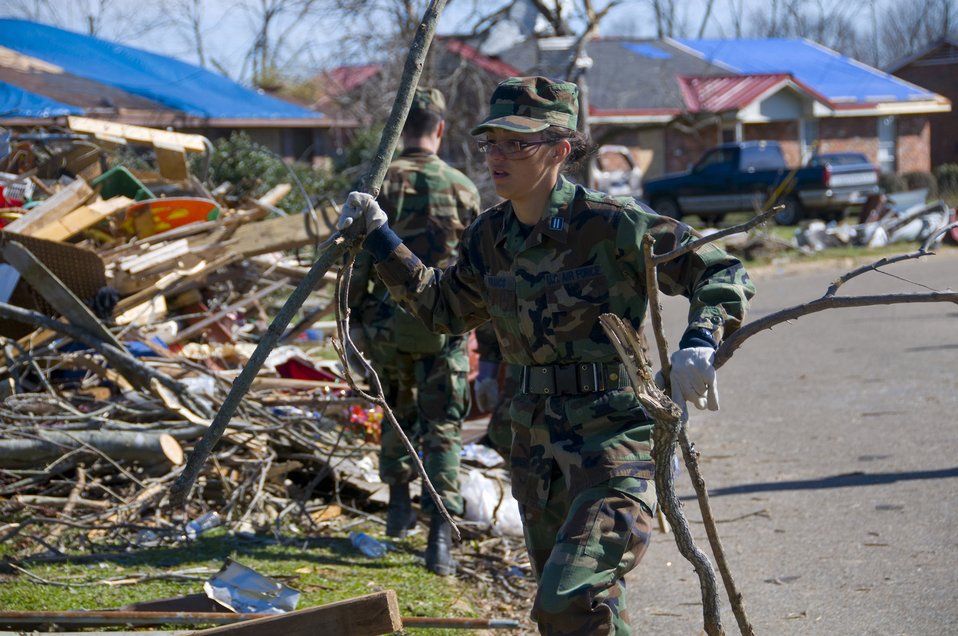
Maxwell Airmen assist city devastated by tornado

Officer Trainee Rosalva Franco clears debris Feb. 19 after a Feb. 17 tornado ripped through Prattville, Ala. More than 65 Officer Training School basic officer trainees and 20 other Airmen assigned to Maxwell Air Force Base, Ala., volunteered to help organize and clear debris from the city located 15 miles northwest of the base. Latest estimates indicate that more than 150 home were destroyed and 760 homes were damaged in a series of storms that created 150 mph winds. Of those homes, approximately 25 military homes were destroyed and 170 were damaged.